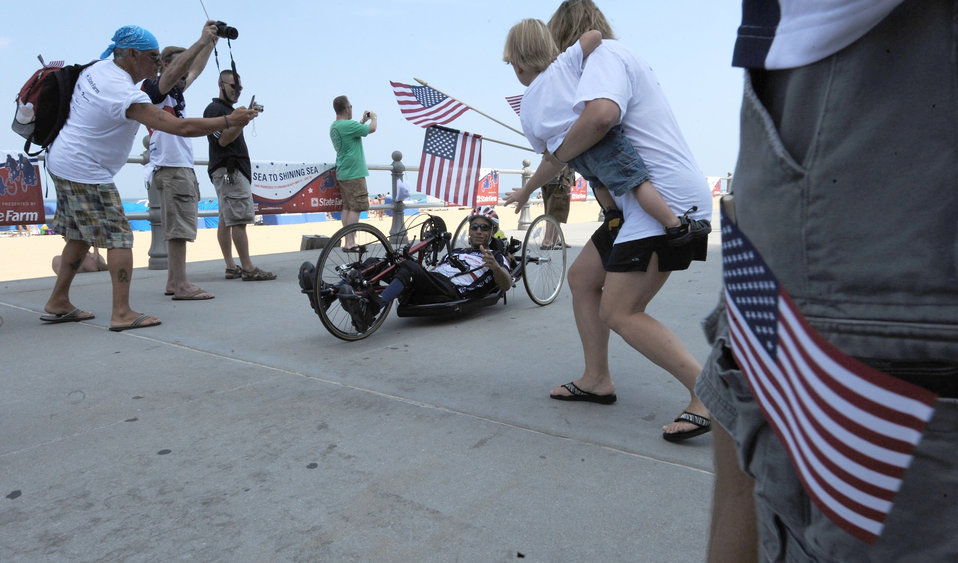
Sea to Shining Sea

Eric Frazier, a Sea to Shining Sea rider, arrives July 24, 2010, in Virginia Beach, Va., to a crowd of family members and local supporters. Sea to Shining Sea is a 4,000-mile bike ride that started at the Golden Gate Bridge in San Francisco, and ended in Virginia Beach.